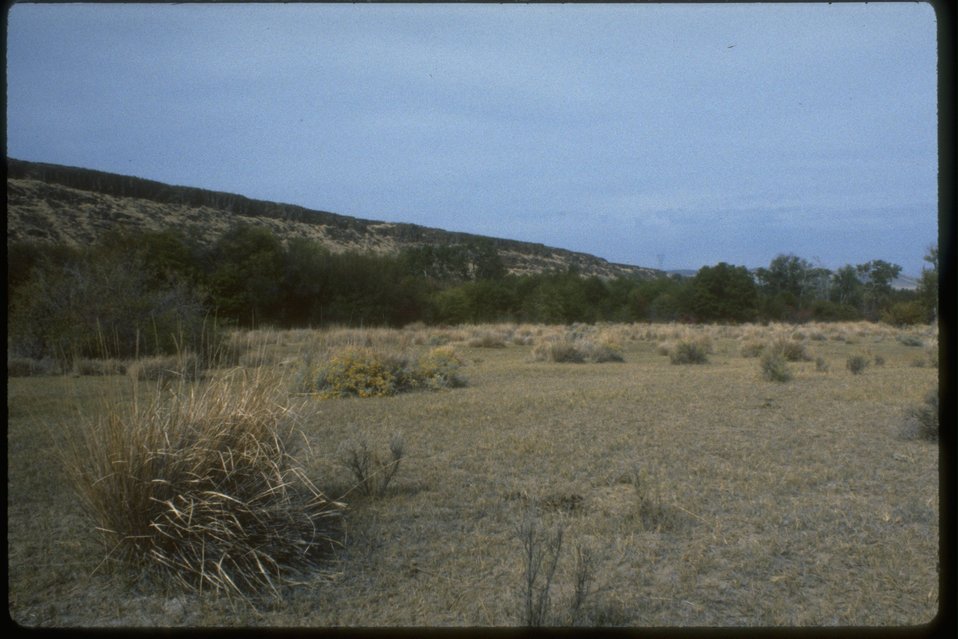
Inland saltgrass basin wildrye Satus Creek near Yakima Reservoir.